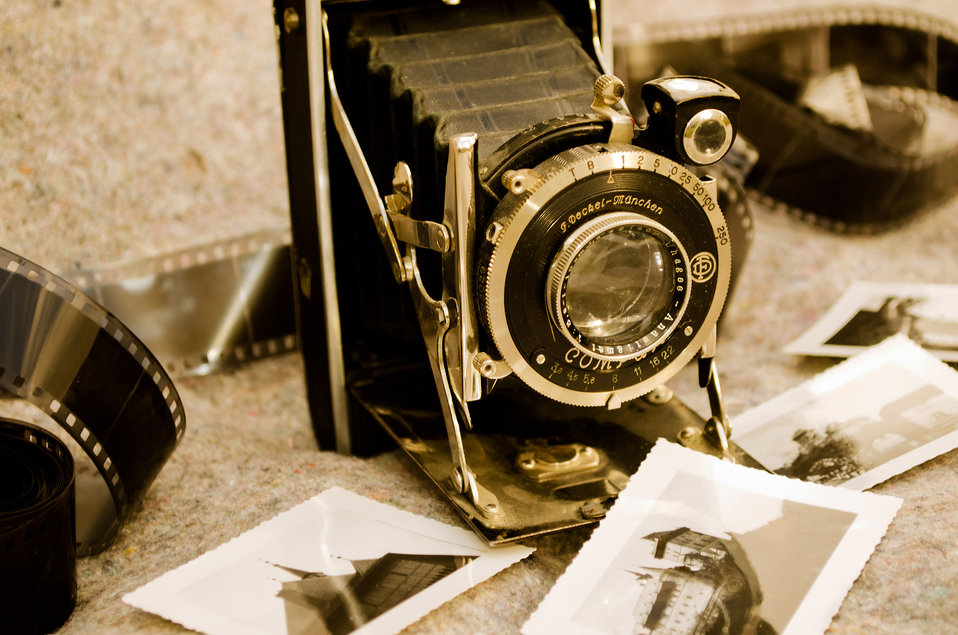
Old camera - wallpaper.